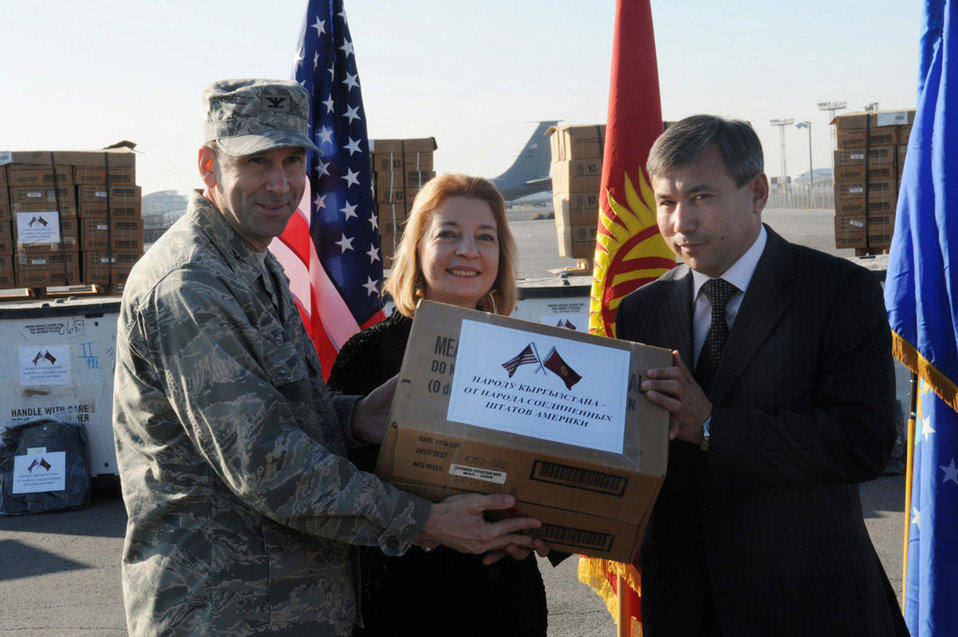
Manas Airmen help provide aid to Kyrgyz in need

Col. Christopher Bence, 376th Air Expeditionary Wing commander at Manas Air Base, Kyrgyzstan, and Tatiana Gfeoller, U.S. Ambassador to the Kyrgyz Republic, hand the first box of meals-ready-to-eat to Mr. Akyl Aitbaev, deputy minister at the Ministry of Emergency Situations, during a humanitarian assistance ceremony Nov. 25. Department of Defense officials donated MREs and cold weather sleeping bags to help local Kyrgyz who may need assistance during the coming winter.